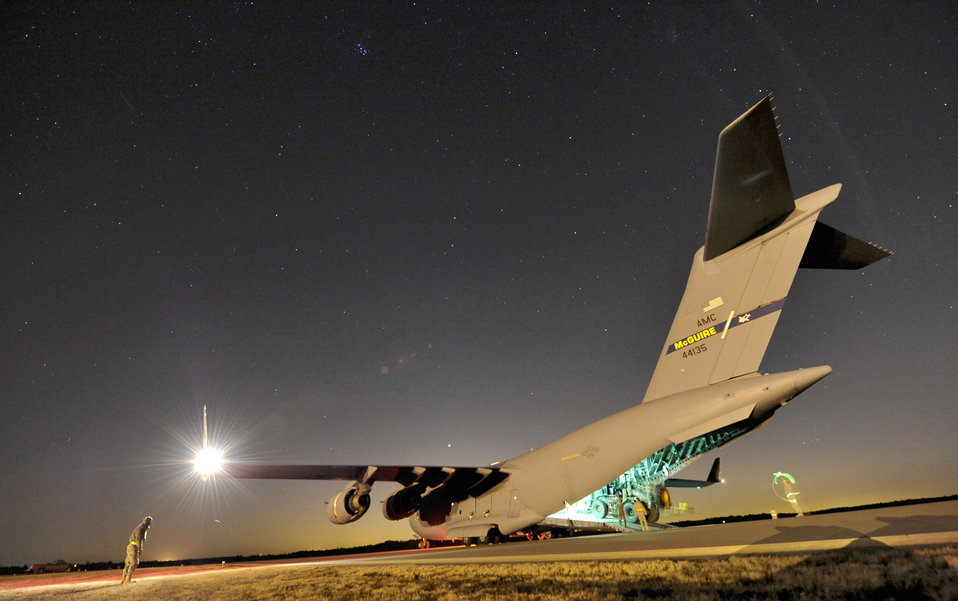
Field training exercise

Aerial porters from the 621st Contingency Response Wing guide an articulated forklift from a C-17 Globemaster III during a nighttime engine-running offload Feb. 23, 2011, at Joint Base McGuire-Dix-Lakehurst, N.J.